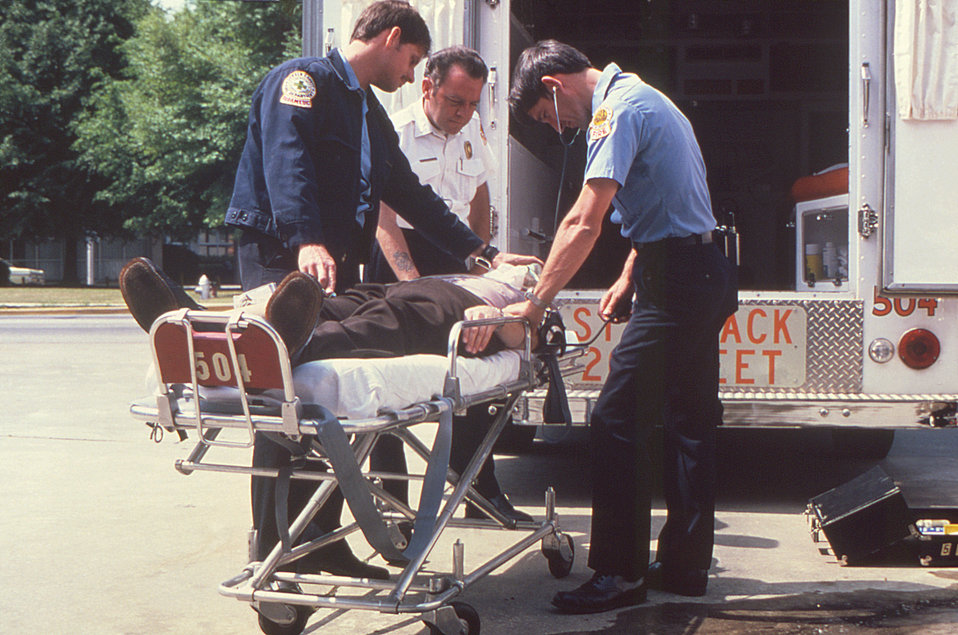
Here we see three emergency medical service (EMS) workers who'd arrived in an ambulance to a scenario involving a man who'd collapsed, and was now lying prone on a mobile gurney, about to be placed aboard the ambulance to be transported to the nearest medical facility.